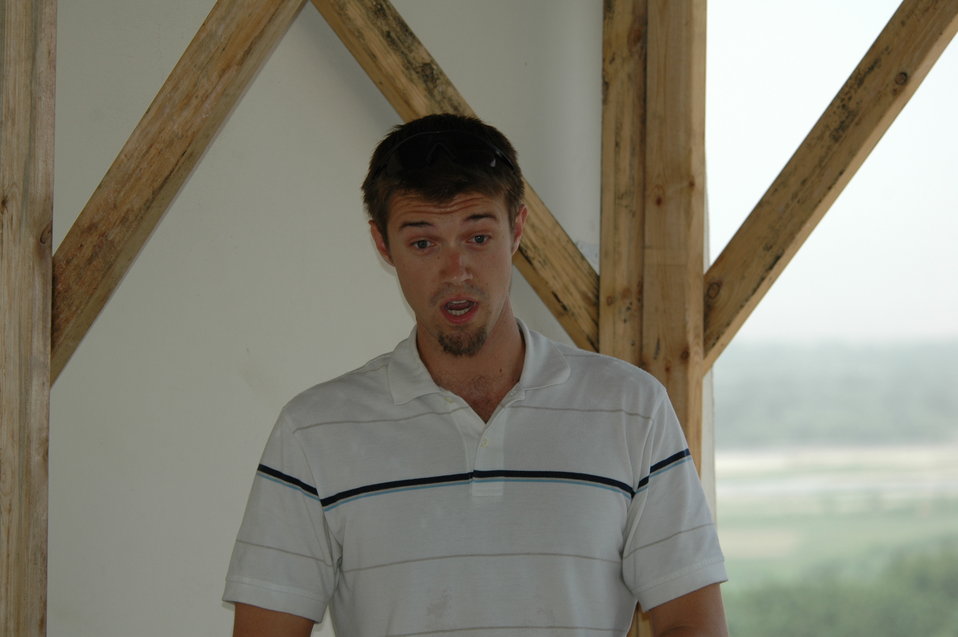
CODEL Berman